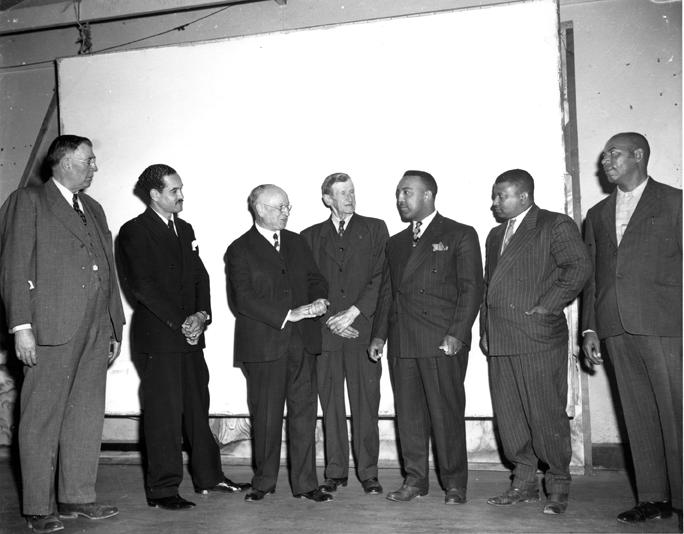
Meeting at Oak Ridge